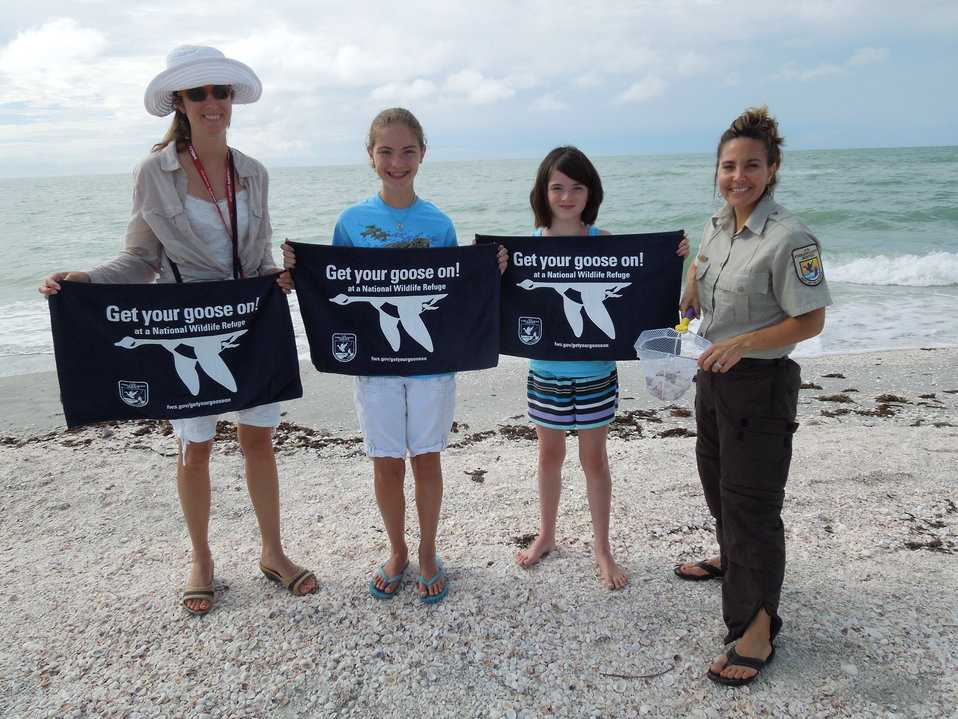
Get Your Goose On! - Sanibel Island Style